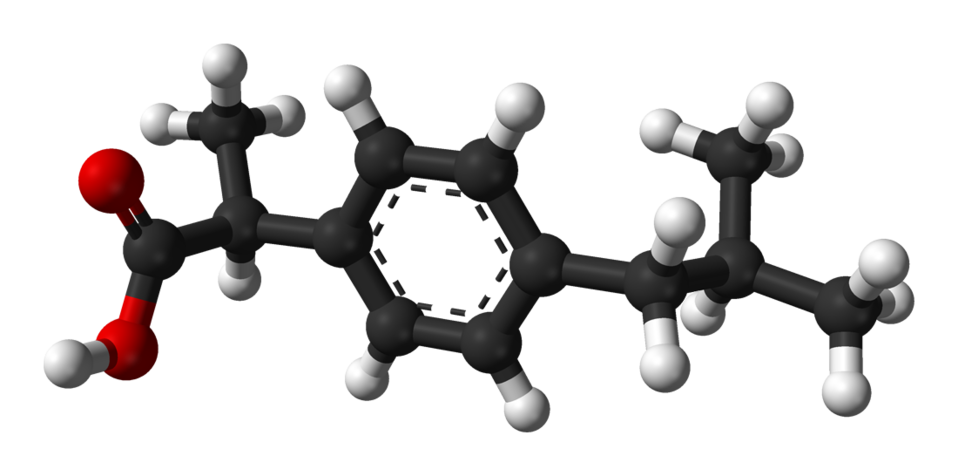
Ball-and-stick model of the (S)-ibuprofen molecule, based on neutron diffraction data from N. Shankland, C. C. Wilson, A. J. Florence and P. J. Cox (1997). 'Refinement of Ibuprofen at 100K by Single-Crystal Pulsed Neutron Diffraction'. Acta Crystallographica Section C 53: 951-954. DOI:10.1107/S0108270197003193.